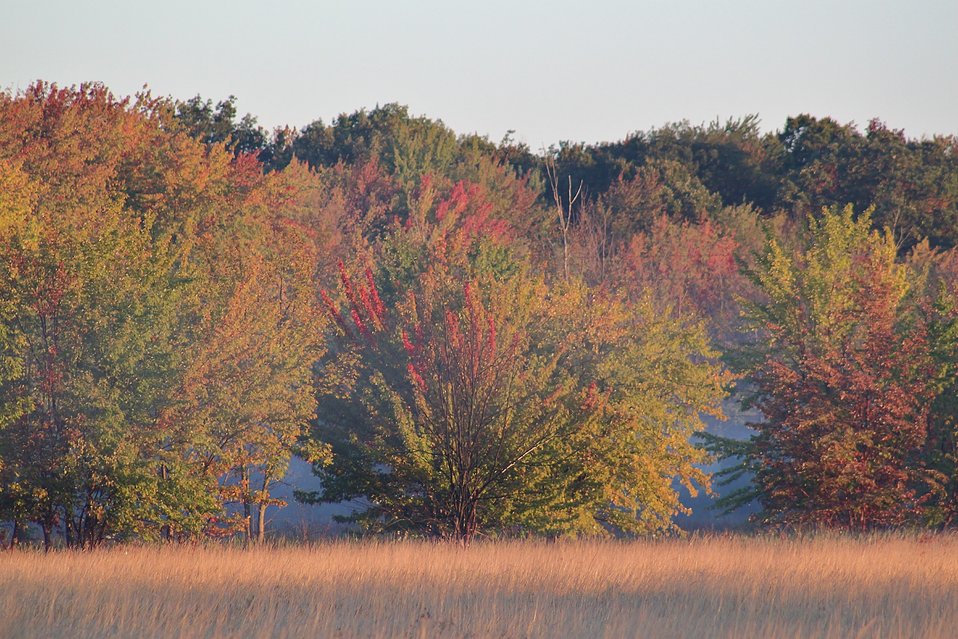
Fall colors

Beginning of Fall at Missisquoi National Wildlife Refuge